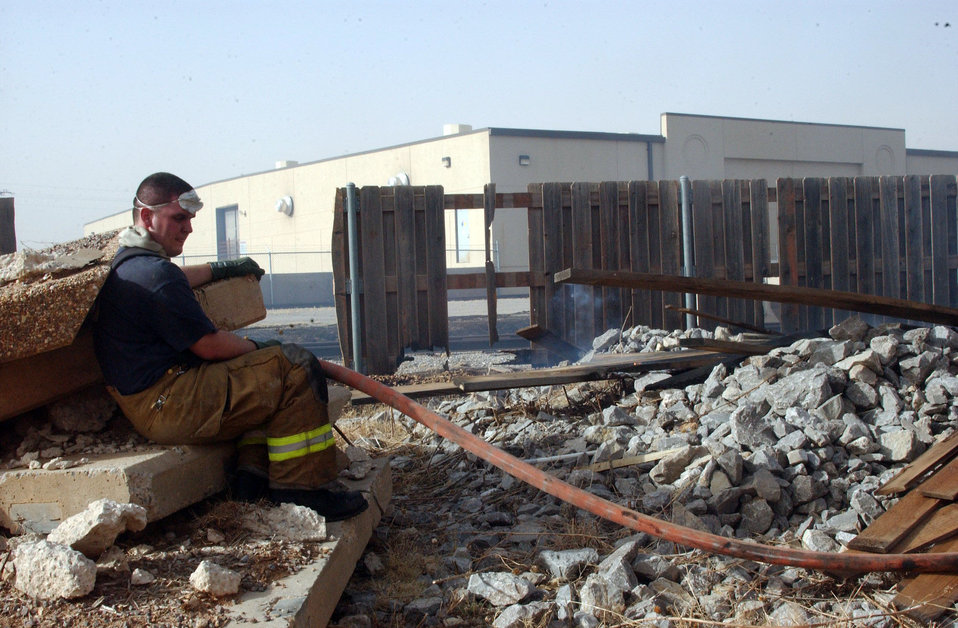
Altus fire

Firefighter Airman 1st Class Thomas Mix from Altus Air Force Base, Okla., takes a break from fighting a fire on base Sunday, March 12. The blaze consumed more than 100 acres near the base's south entrance gate.